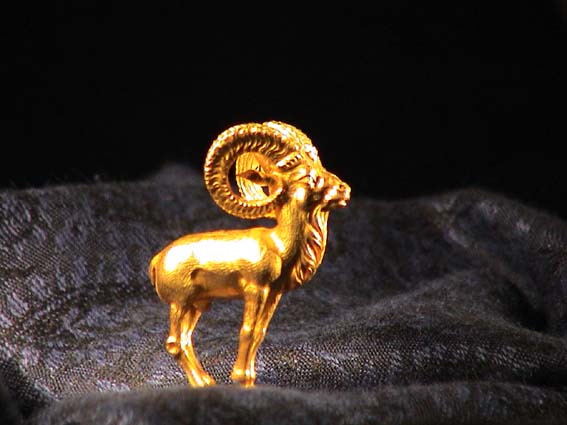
taken by my wife Ana Rodriguez, when Bactrian Gold was first unearthed, and before being shown to the public in Kabul end 2004 after nearly 20 years in the vaults of the National Treasury Français : Mouflon (urial).(ovis orientalis blandford, Hume 1877) Afghanistan, Tillyan tepe, Ier siècle avant notre ère. Or, 5,2 x 4 cm. Musée National d'Afghanistan. Visible lors de l'exposition temporaire: Afghanistan : Les trésors retrouvés : Collections du Musée National de Kaboul, Pierre Cambon, dir. Musée national des arts asiatiques - Guimet, 2006-2007, éditions de la Réunion des musées nationaux, Paris, 300 pages. ISBN 978-2-7118-5218-5.